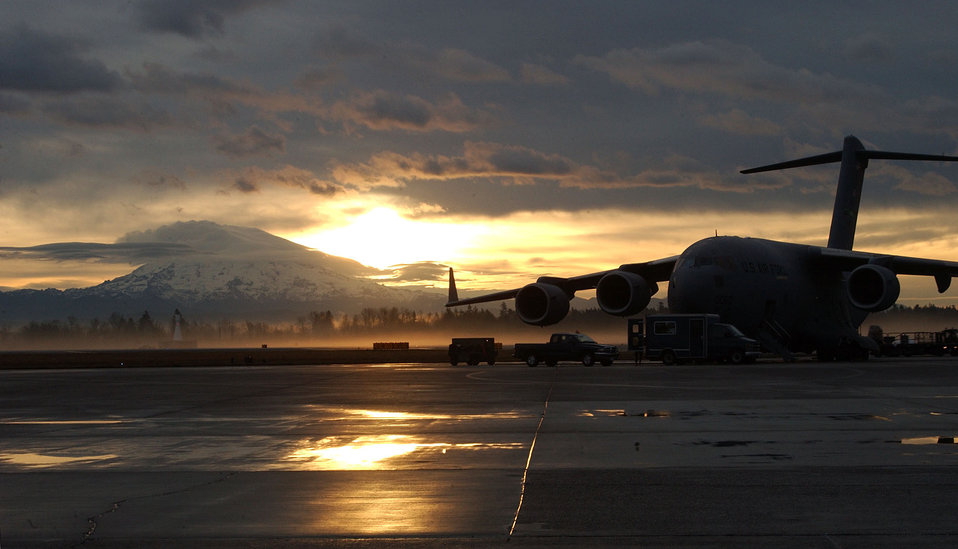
In the dawns early light

MCCHORD AIR FORCE BASE, Wash. -- A C-17 Globemaster III sits on the flightline here recently and waits to begin its day of combat airlift as dawn breaks over Mt. Rainier.